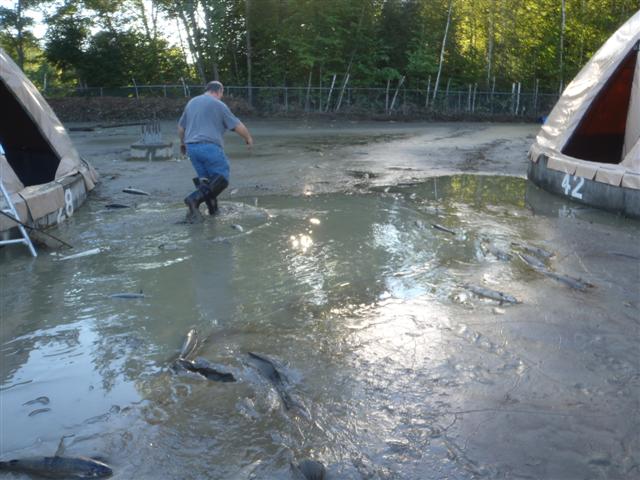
Flooding at White River National Fish Hatchery

Dead fish float in the water at White River National Fish Hatchery in Bethel, VT. which flooded after Hurricane Irene on Sunday, August 28, 2011.